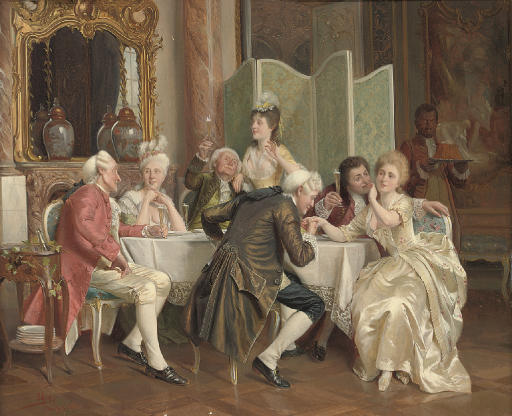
A toast. Signed, inscribed and dated A. Knoop/München.1893), oil on panel 27.3 x 33 cm